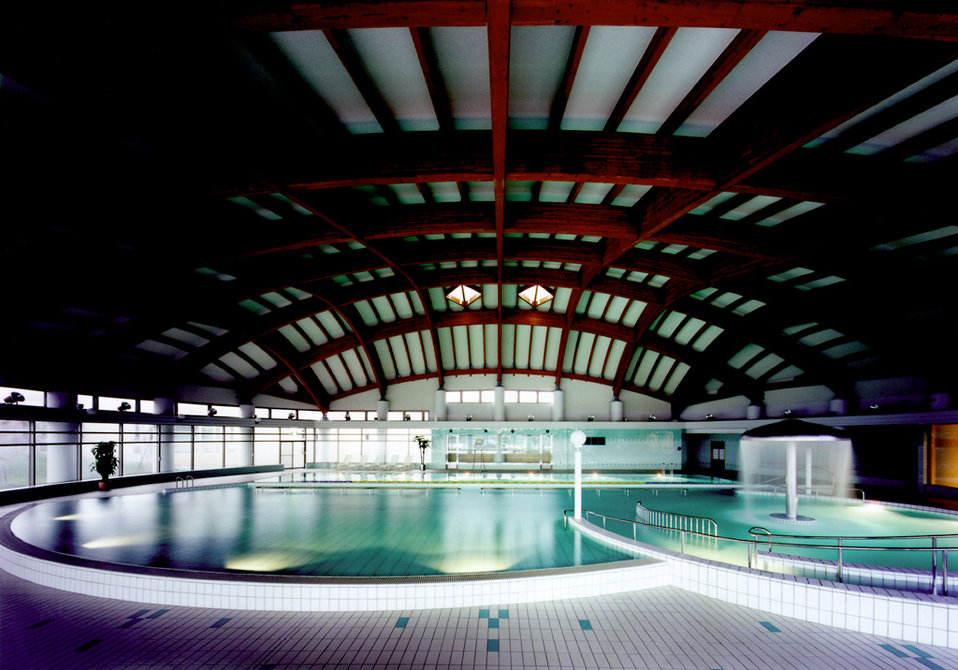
This is one of a series of three photographs (PHIL# 9096 - 9098), which revealed the interior of a large indoor publicly-accessible swimming pool that provided an elegant ramped access into the pool, steps, and a transfer ledge that enclosed the pool at its edge. This collection from the Center for Universal Design's Universal Exemplars, is from the Chou Silver Zone Complex located in Akita Prefecture in Northern Japan. The pool allowed people the ability to make personal choices in how they entered and exited the pool, according to their comfort and safety levels. Taking physical impairments into account during the designing of such a facility only enhanced the enjoyment of all who visited this recreation area.